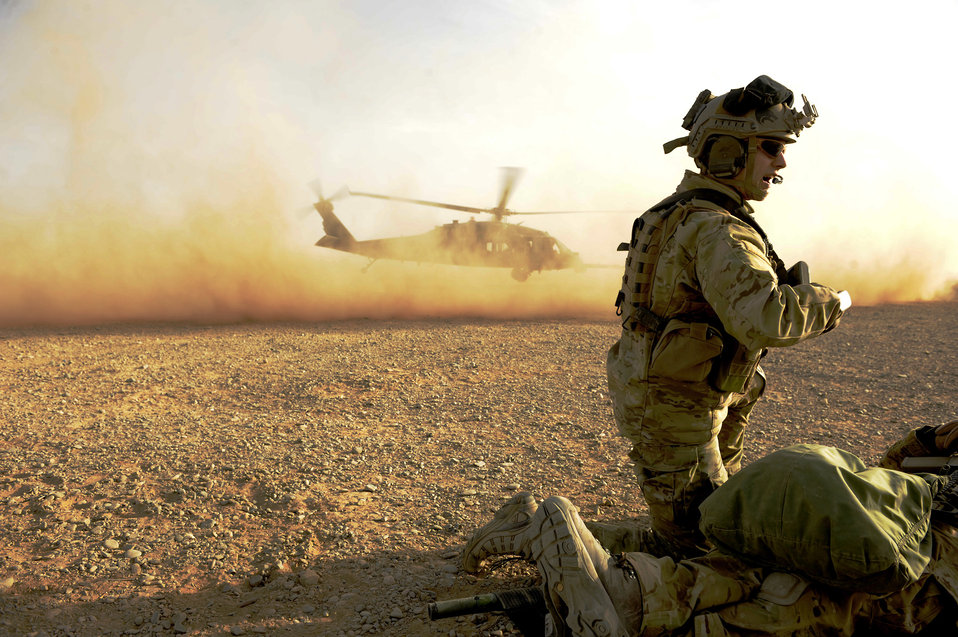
Kandahar Airmen practice evacuation skills

Capt. Nick Morgans talks with the crew of the HH-60 Pave Hawk as it lands during a mass casualty scenario Dec. 24, 2010, near Kandahar, Afghanistan. Captain Morgans is assigned to the 46th Expeditionary Rescue Squadron.